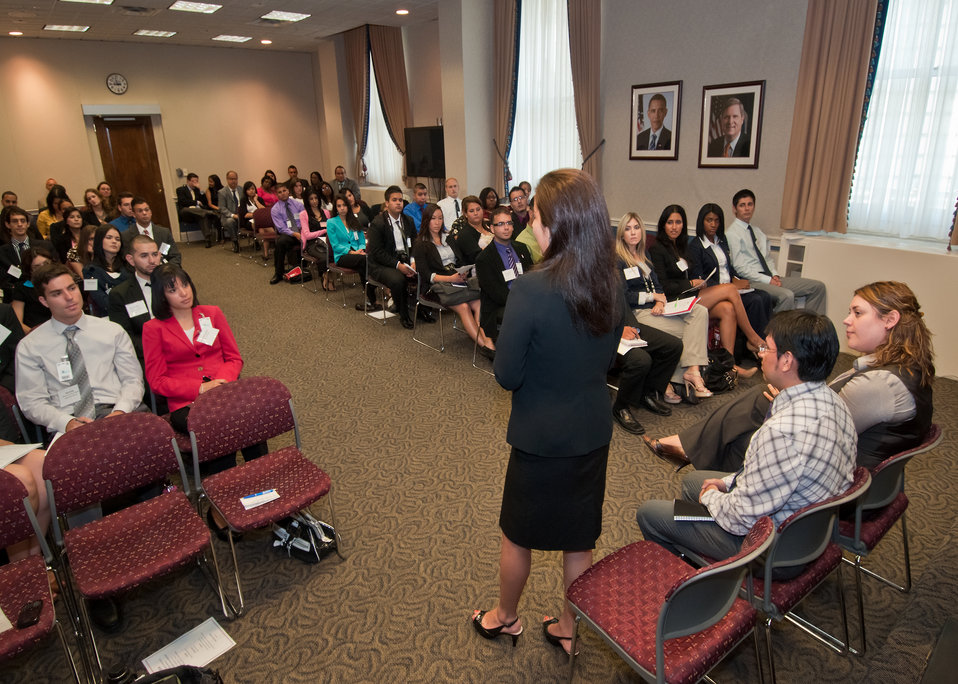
Agriculture Office of the Executive Secretariat Program Liaison Specialist Ines Lucio explains her experience and offers guidance to interns to make their experience as valuable as hers at the United States Department of Agriculture (USDA) Hispanic Association of Colleges and University (HACU) and Tribal College summer intern program during their orientation at USDA in Washington, DC, Monday, Jun. 6, 2011. The HACU/Tribal College National Internship Program represents more than 400 colleges and universities committed to higher education in the U.S., Puerto Rico, Latin America, Spain and Portugal and places student interns each year with federal agencies in Washington, DC or in field offices around the country.